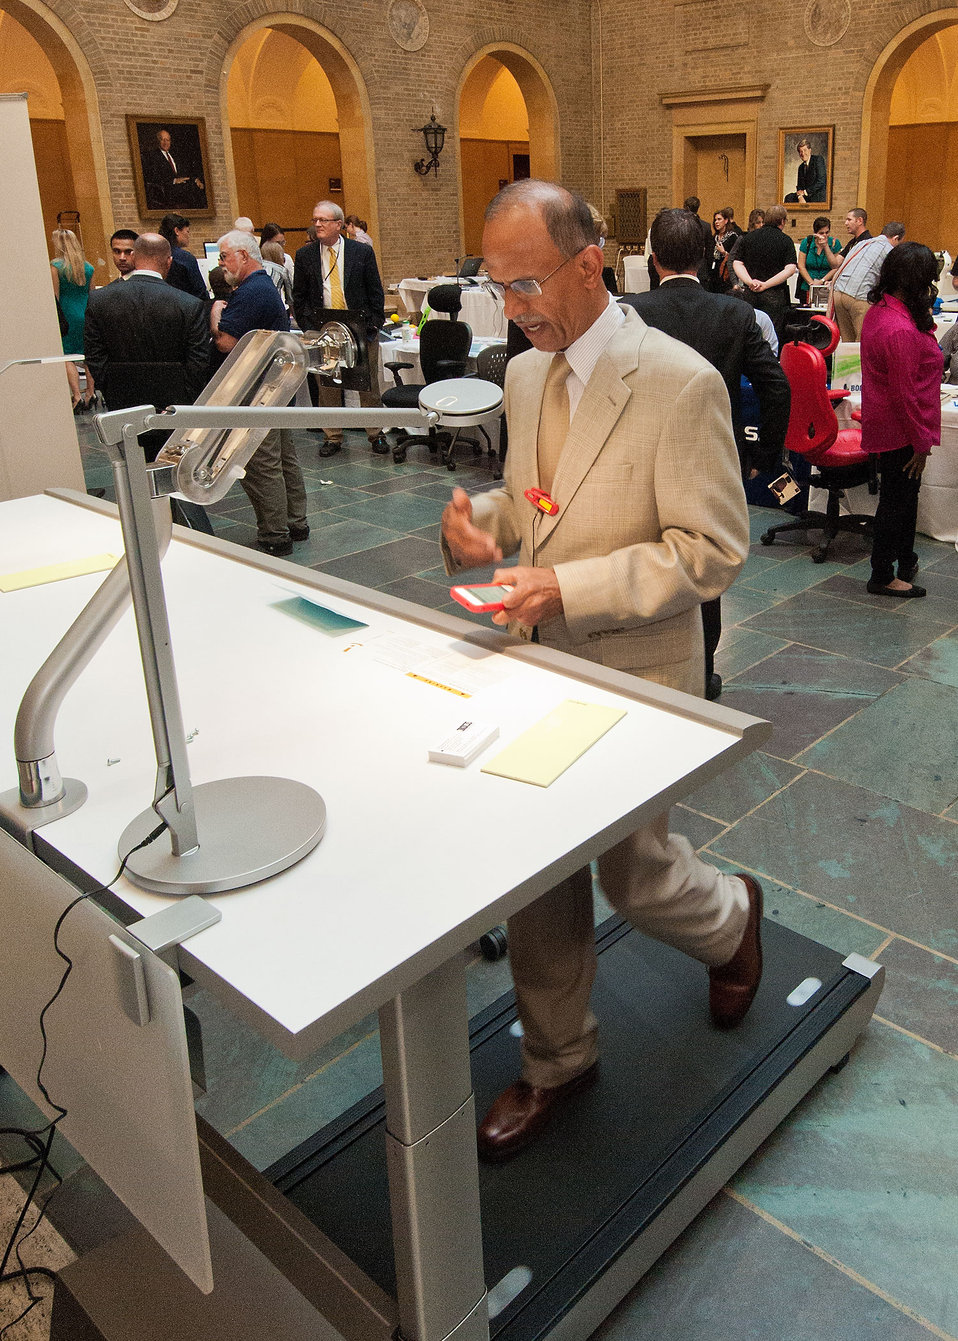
Michael Valivullah tries a Steel Case Walk Station at the U.S. Department of Agriculture (USDA) Departmental Management (DM) Target Center 20th Anniversary at USDA in Washington, D.C. on Thursday, Sept. 13, 2012. The USDA Target Center has provides Assistive Technology to employees with disabilities. The Center has assisted thousands of individuals with disabilities to further contribute to the mission of USDA.